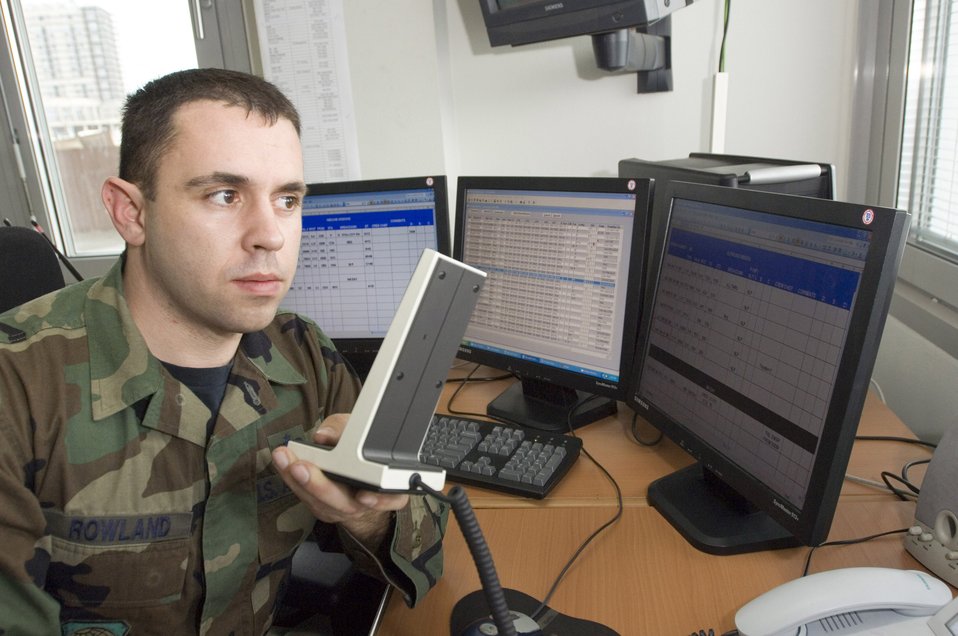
Ramstein airlift mission at full speed

Staff Sgt. David Rowland dispatches a load team to download a C-17 Globemaster III at Ramstein Air Base, Germany, on Thursday, March 30, 2006. Sergeant Rowland, of Platte City, Mo., is a ramp services specialist with the 723rd Aircraft Maintenance Unit.